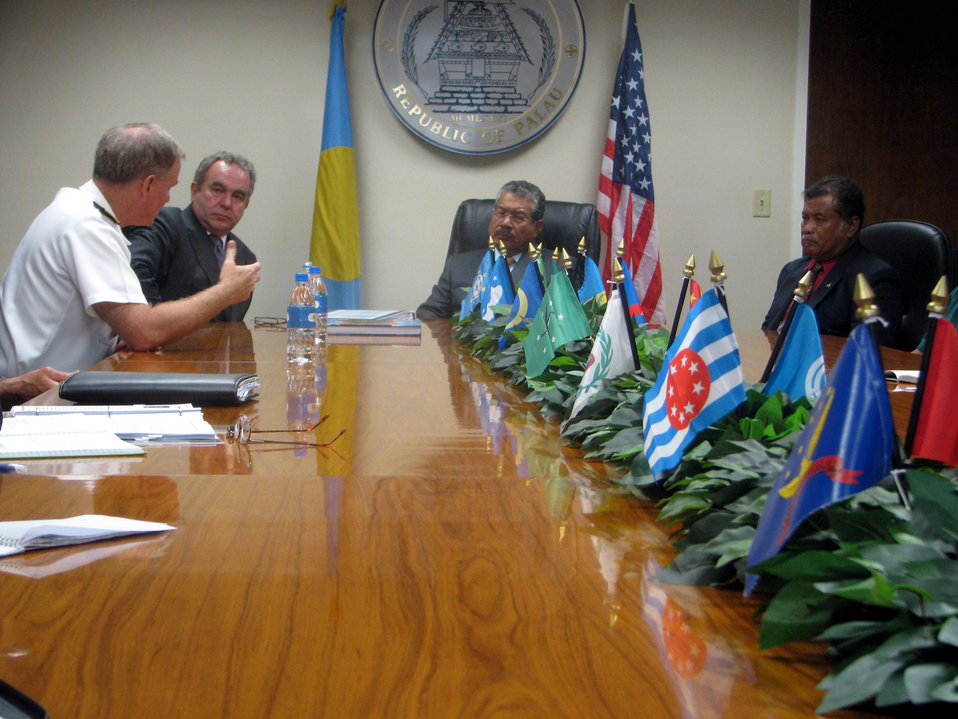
Adm. Walsh Addresses Palau President Toribiong

Adm. Patrick Walsh, commander of U.S. Pacific Fleet, left; addresses President Johnson Toribiong of Palau, right center, during his meeting with Assistant Secretary of State for East Asian and Pacific Affairs Kurt Campbell, left center, and a delegation he is leading in Ngerulmud, Palau, on June 30, 2011. The delegation also includes Office of the Secretary of Defense South/Southeast Asia Principal Director, Marine Corps Brig. Gen. Richard Simcock; and U.S. Agency for International Development (USAID) Assistant Administrator Nisha Biswal, who are visiting nations throughout the South Pacific to enhance bilateral political, economic, and security relations in the region.